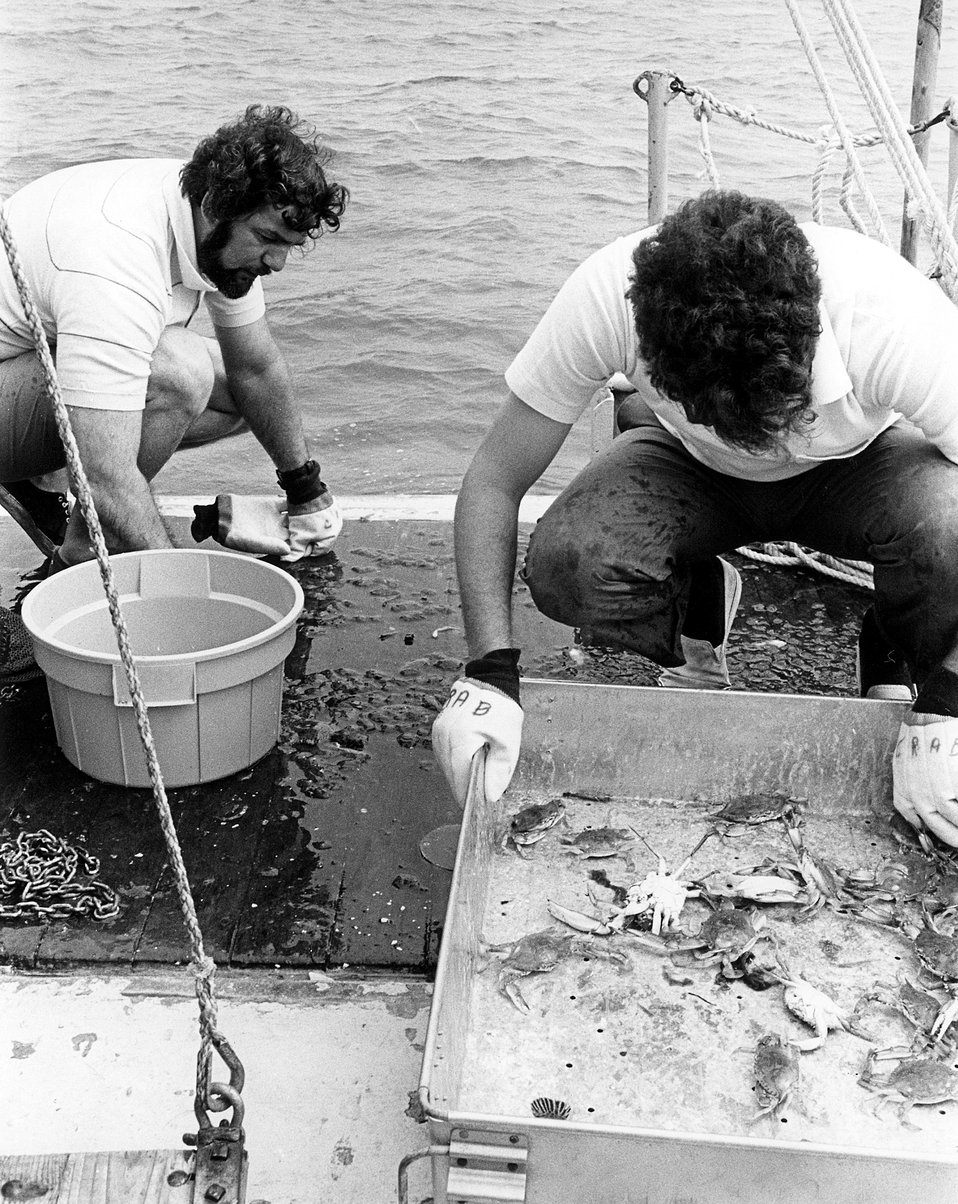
University of Maryland scientists check the size, number and sex of Maryland Blue Crab captured in the Chesapeake Bay near the Calvert Cliffs nuclear generating plant as part of a research project supported by the Atomic Energy Commission. Circa 1972.